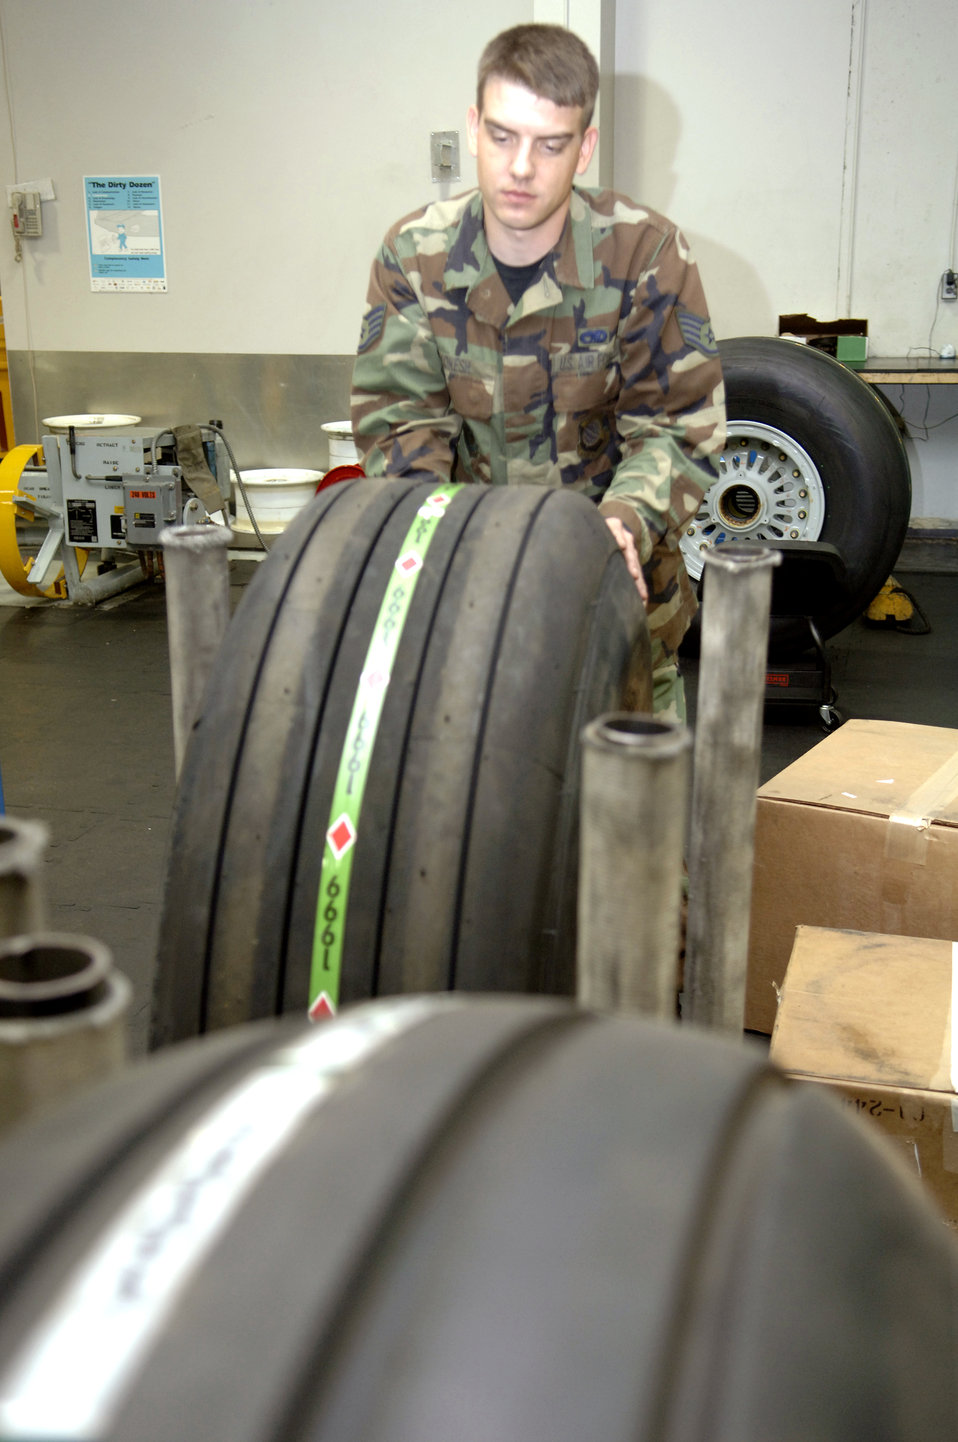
AFSO 21 tools enable Air Force to improve process

Staff Sgt. Joseph Kokesh checks the tire inventory in the 92nd Maintenance Squadron's wheel and tire shop for KC-135 Stratotankers. An Air Force Smart Operations 21 initiative is under way in the shop to eliminate almost half of the current tire stock. The reduction should result in a significant cost avoidance for the Air Force.